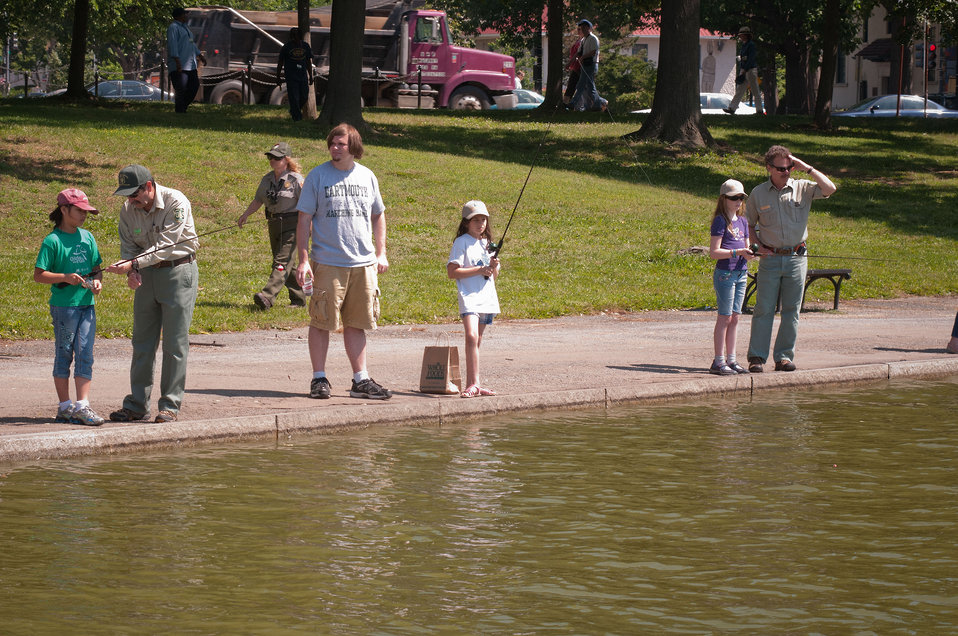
(L to R) John Eaton Elementary School student Josie Prentice, U.S. Forest Service Associate Deputy Chief Jim Pena, Department of Interior employee Tyler Spunaugle, John Eaton Elementary School student Isabella Wood, John Eaton Elementary School student Maggie Mead-McCaughan, and Director Recreation, Heritage and Volunteers, Forest Service Jim Bedwell cast their lines at Constitution Gardens on National Fishing Day in Washington, D.C. on Monday, June 4, 2012. The Forest Service along with many Federal agencies, non-profit organizations and outdoor recreation companies demonstrated the joy of fishing to local elementary school students.